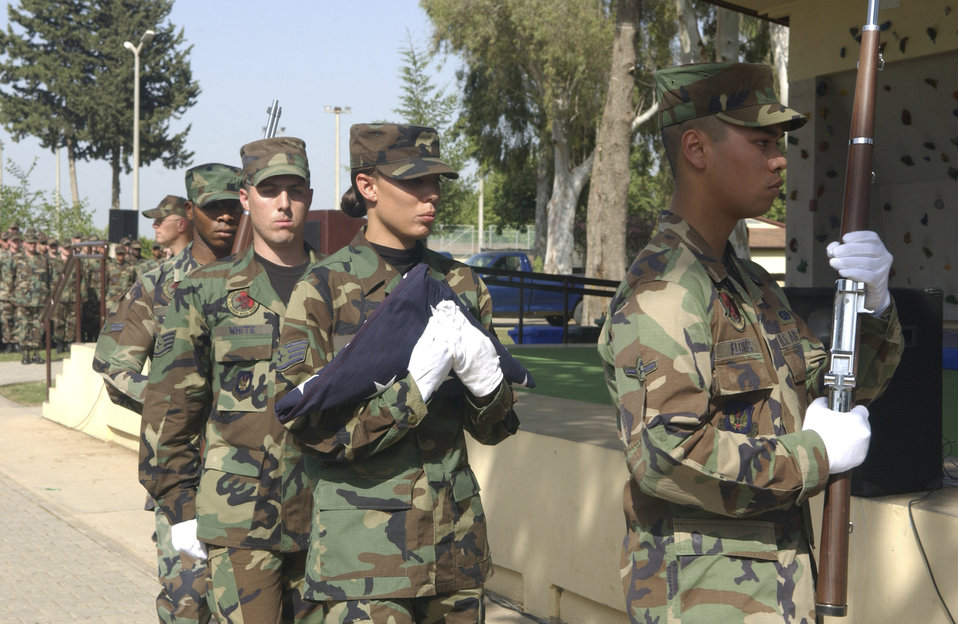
Memorial Day ceremony

Incirlk Air Base Honor Guard members retire the colors following a Memorial Day ceremony at the base May 25. The American flag was flown aboard a C-17 Globemaster III in support of Operation Iraqi Freedom.